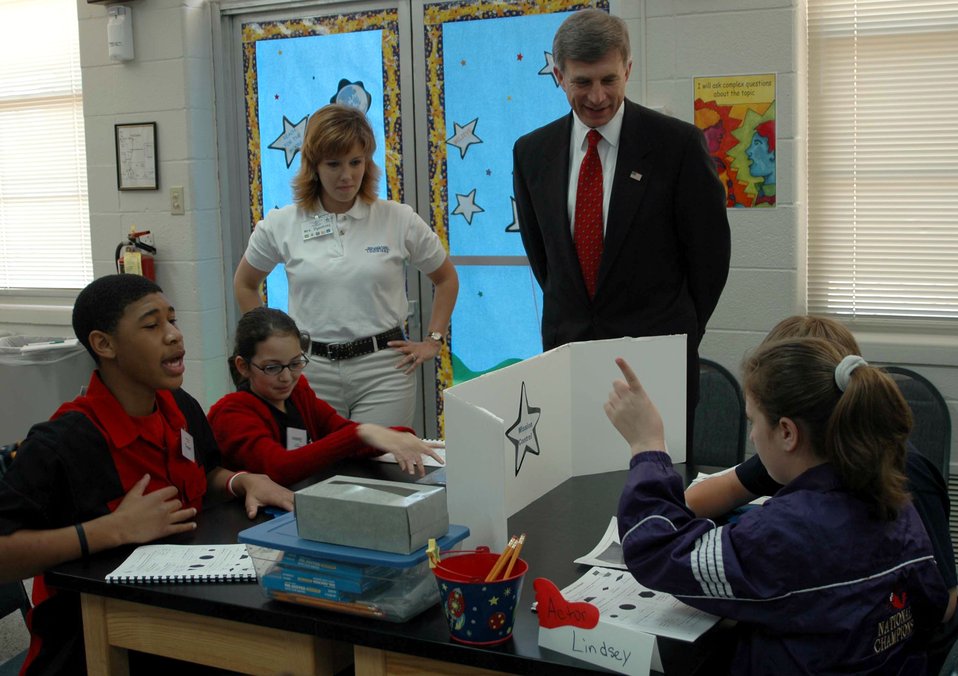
Undersecretary visits STARBASE Louisiana

Laurie Ilgenfritz, a STARBASE Louisiana instructor, and Dr. Ronald Sega, undersecretary of the Air Force, observe Keithville, La., fifth graders participating in an exercise designed to build teamwork and communication skills. Dr. Sega, a former astronaut and retired major general, took time from a visit at nearby Barksdale Air Force Base to spend time with the children.